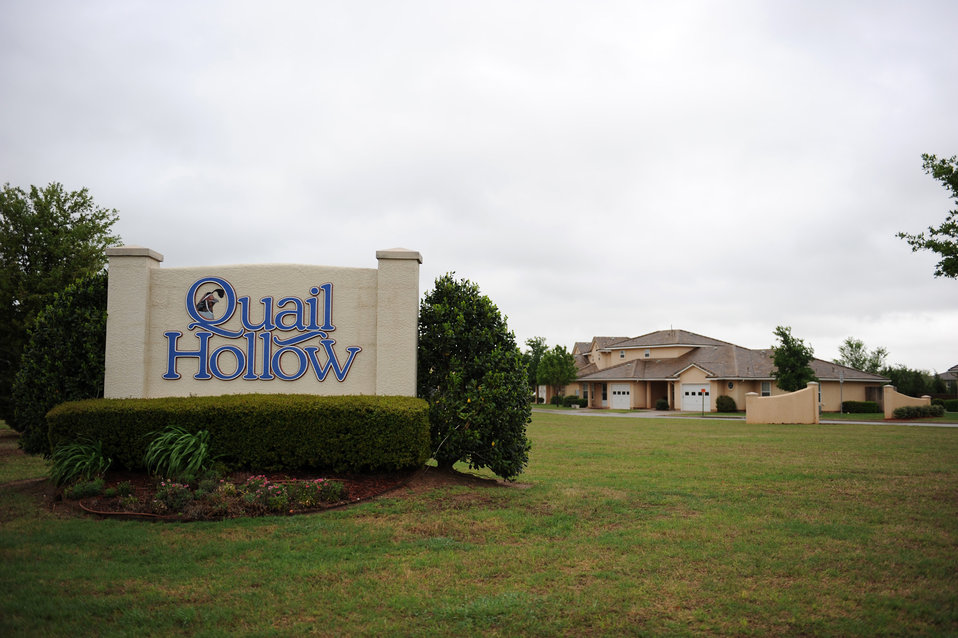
Dyess offers specialized housing through privatization

Quail Hollow complex is a housing privatization project with apartments and townhomes that are offered to Airmen and their families stationed at Dyess Air Force Base, Texas.